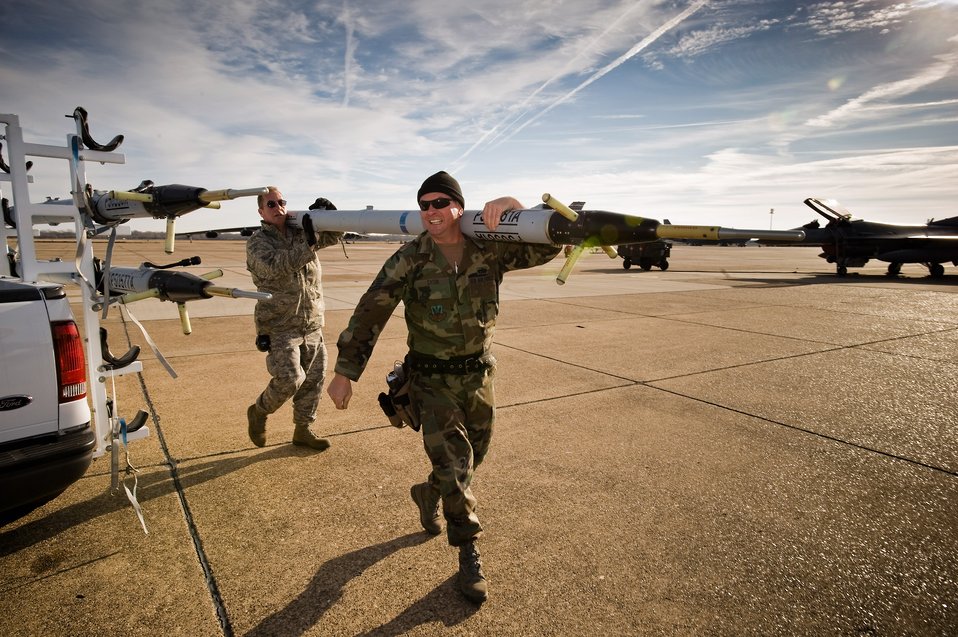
Swap out

Master Sgt. Mark Caton and Senior Master Sgt. Mark Jones carry an air combat maneuvering instrumentation pod to be mounted upon the wing of an F-16 Fighting Falcon Dec. 5 at Green Flag East at Barksdale Air Force Base, La. The ACMI pods are being used by fighter pilots to provide real-time 3-D flight data to the battlefield commander during Green Flag East. Sergeant Caton is a Colorado Air National Guard aircraft armament specialist, and Sergeant Jones is the 140th Maintenance Squadron weapons element NCO in charge from Buckley Air Force Base, Colo.